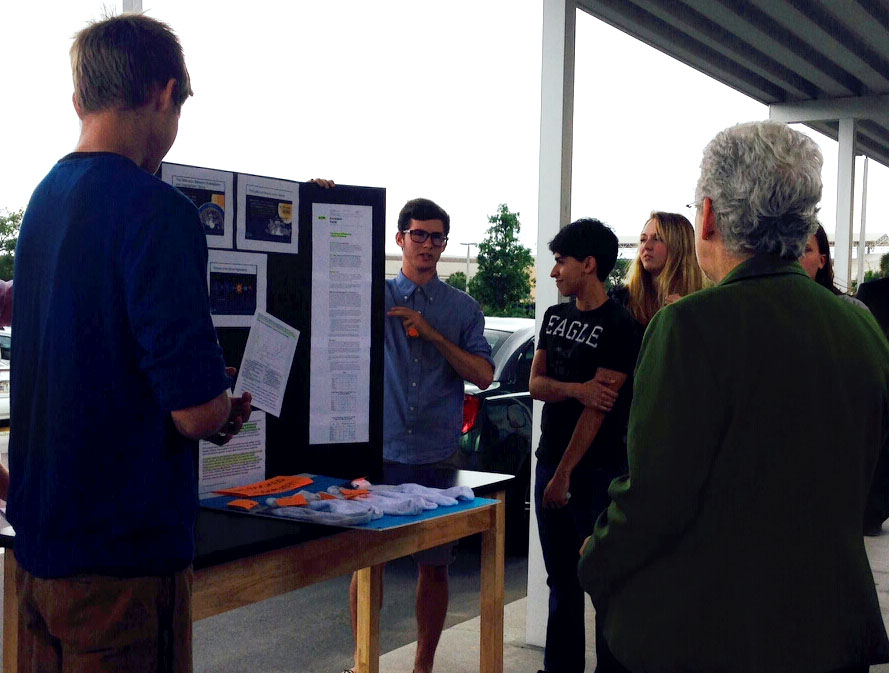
EPA Administrator at Dr Phillips High School

Administrator Gina McCarthy and students at Dr Phillips High School in Orlando view experiment on air emission standards from cars.